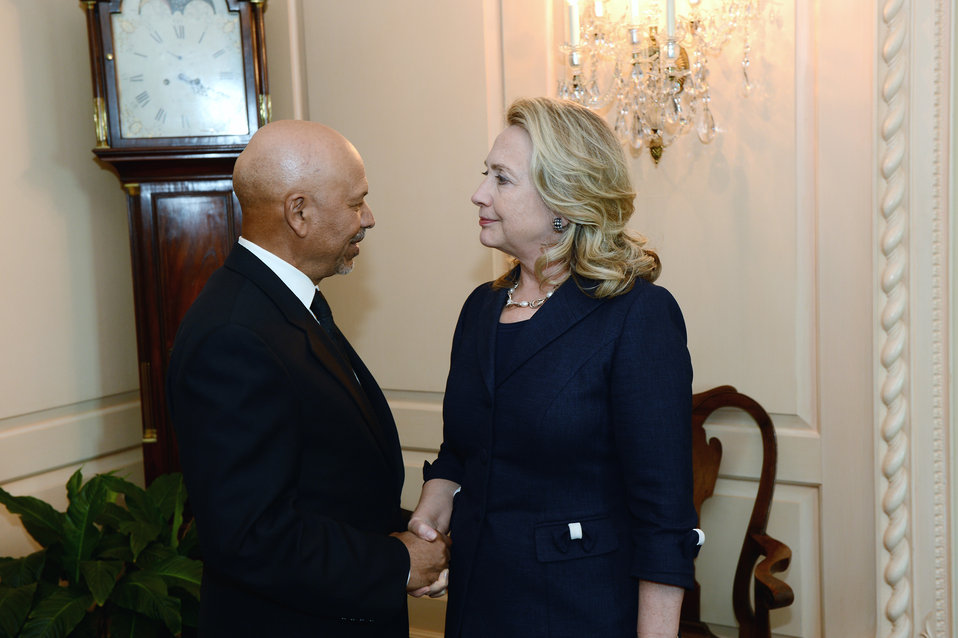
Secretary Clinton Meets With Libya's Ambassador to the U.S. Ali Suleiman Aujali

U.S. Secretary of State Hillary Rodham Clinton meets with Libya's Ambassador to the U.S. Ali Suleiman Aujali at the U.S. Department of State in Washington, D.C. on September 12, 2012.